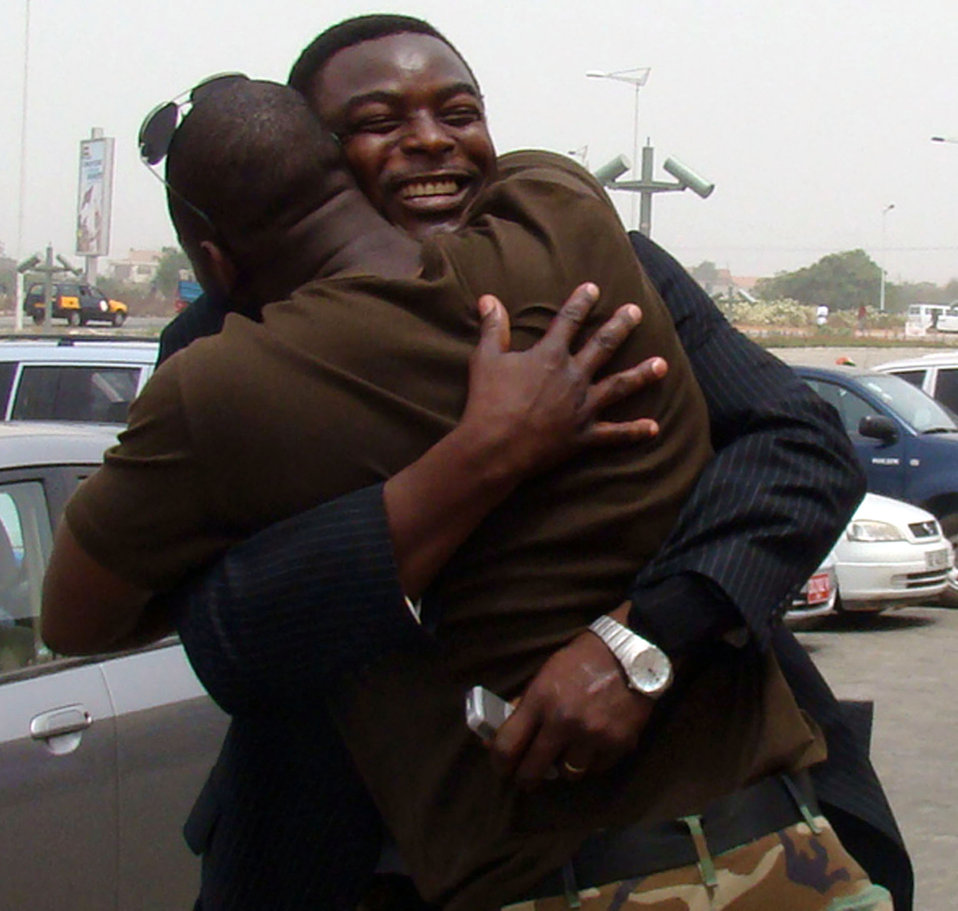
Airman helps saves boy in Africa

Air Force Staff Sgt. Hodonou Motepke (front), a heating, ventilation and air conditioning technician, and native African, embraces his older brother, Clement Motepke, Feb. 21, as they greet one another for the first time in a decade. This is Sergeant Motepke's first trip back to Africa since he left in 1998. The U.S. military presence in Ghana is in support of U.S. President George Bush's visits to the continent.